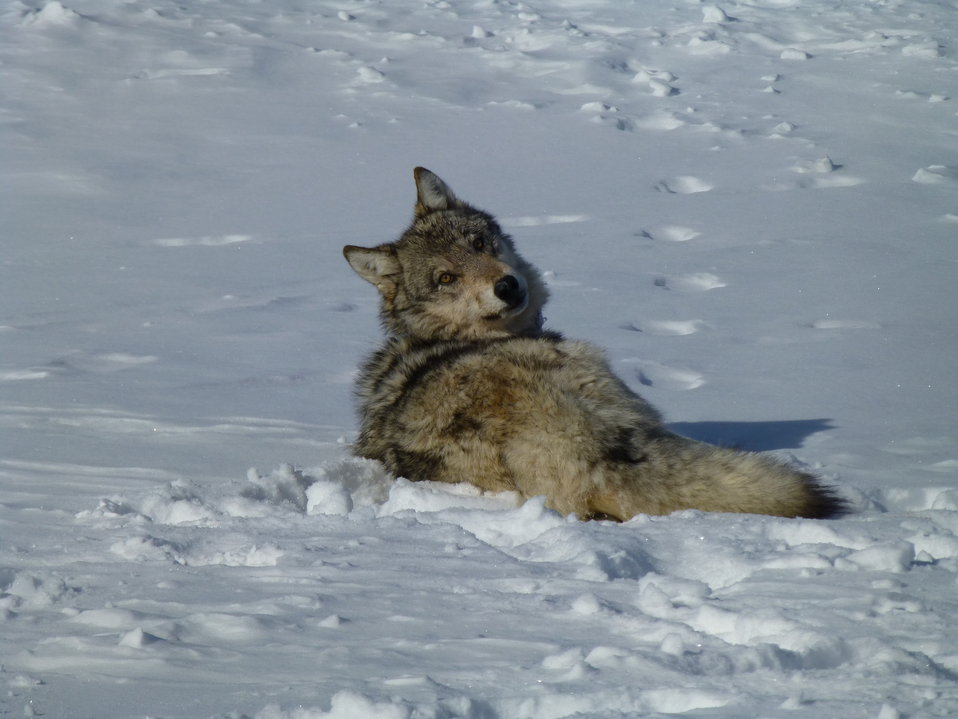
Taking a Look Back

As the immobilization drug wears off, a gray wolf regains more voluntary muscle use.